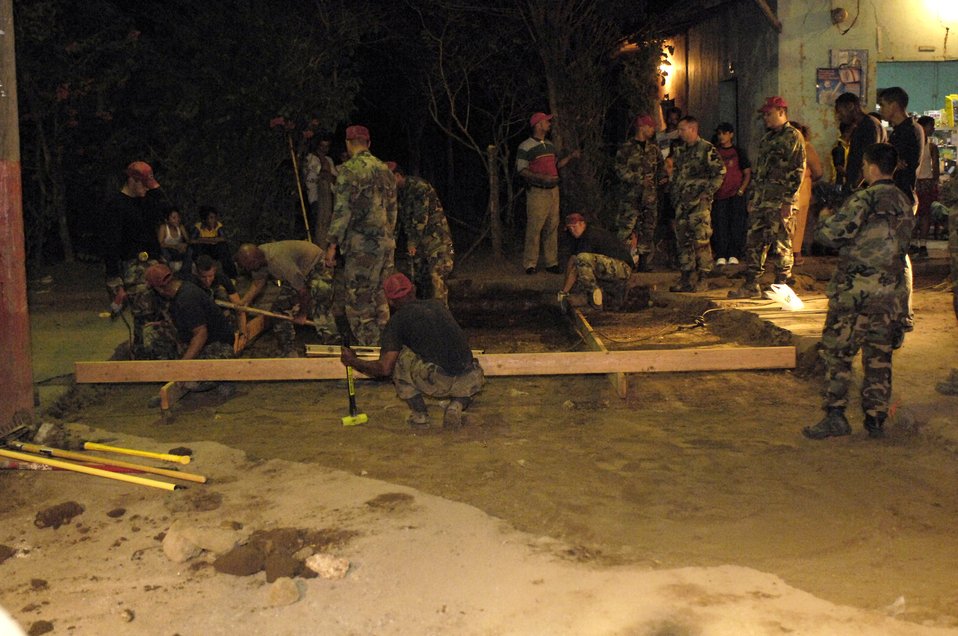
New Horizons-Nicaragua 2007

Airmen deployed with 820th Expeditionary Red Horse Squadron work on replacing a roadway March 2 in Santa Teresa, Nicaragua. The effort was part of New Horizons-Nicaragua 2007, a $7.25 million joint U.S. and Nicaraguan military humanitarian and training exercise, providing a new school, and medical clinic, as well as free health and veterinary care, giving aid and strengthening bonds between the two nations.